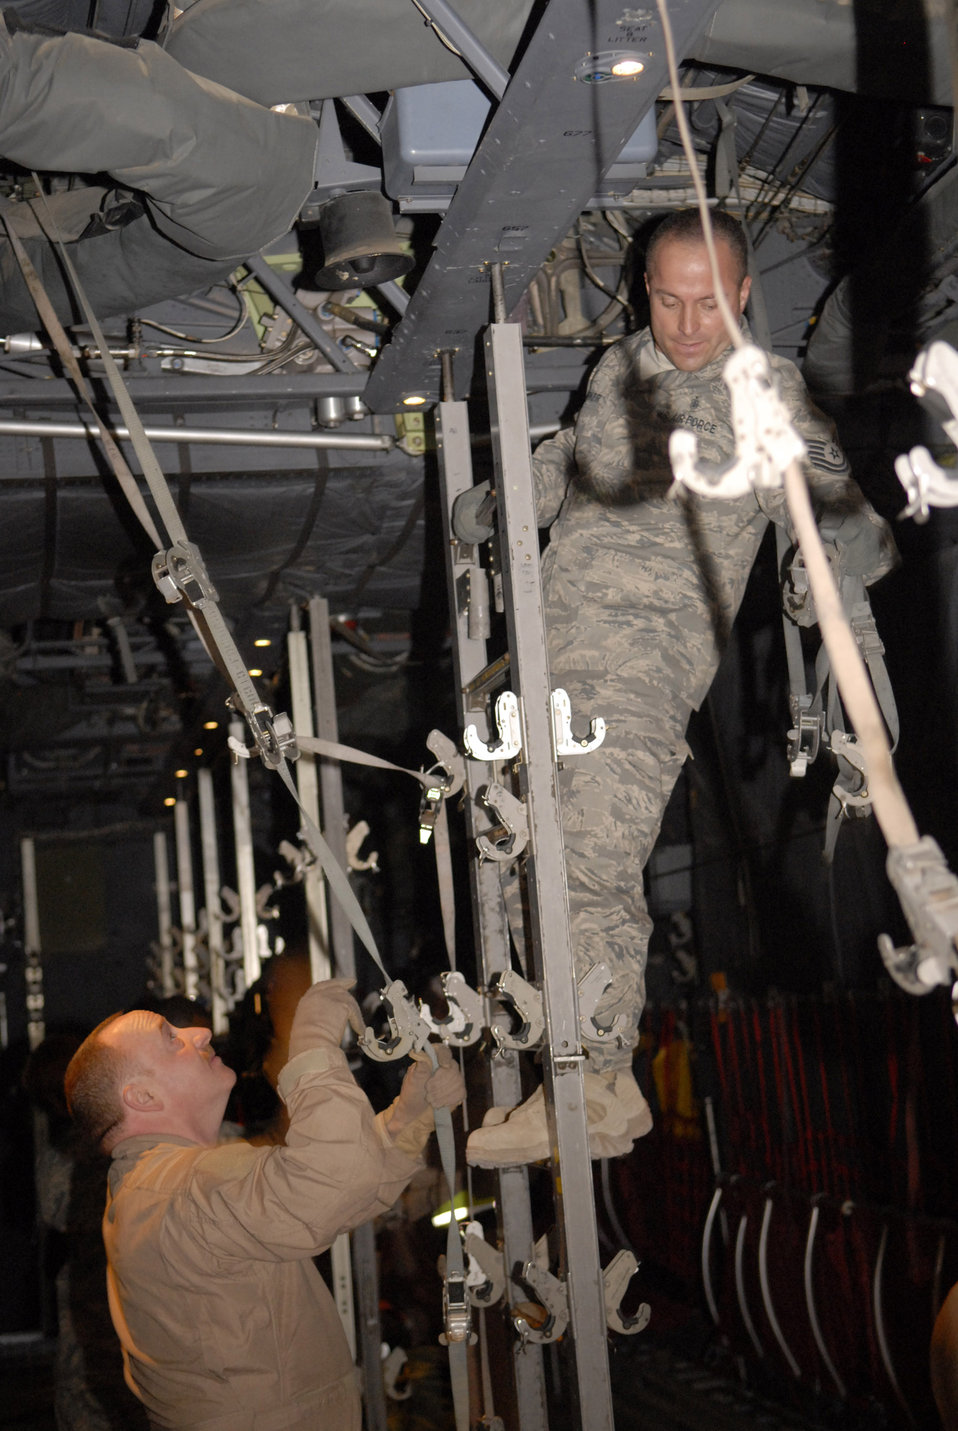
Airmen transport, care for wounded warriors

Technical Sgt. Keith Barker and Master Sgt. Michael Granlund secure hooks to hold litters on a C-130 Hercules for transporting patients on board Jan. 11 at an air base in Southwest Asia. The ground crew loads medical supplies onto aircraft to support patients being transported throughout the area of operations. Sergeant Barker is the 379th Expeditionary Aeromedical Evacuation Squadron ground crew NCO in charge, and Sergeant Granlund is a 379th aircrew member.